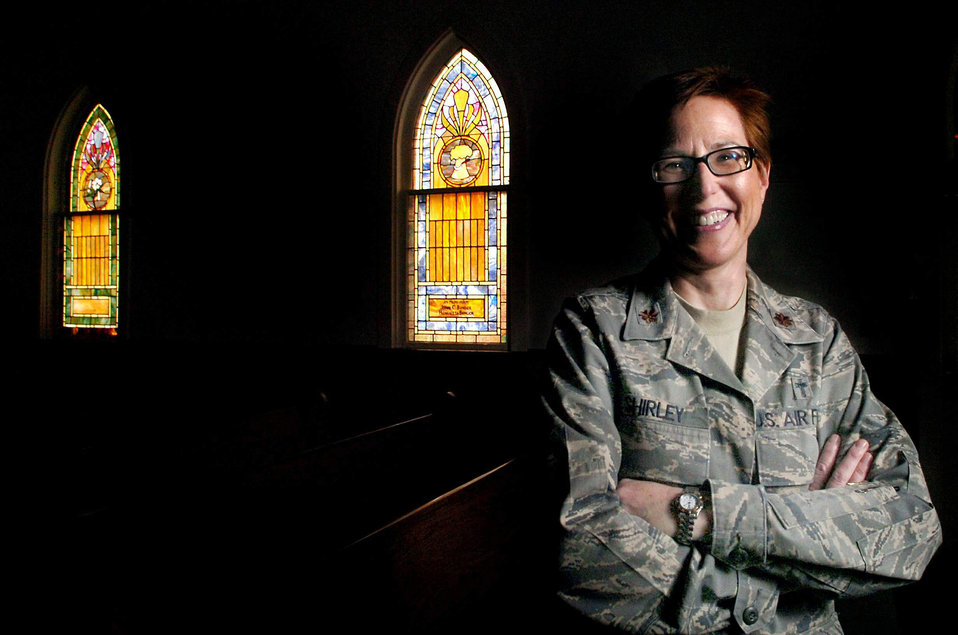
'Military Saves' campaign battles debt

Chaplain (Maj.) Sarah Shirley, a chaplain assigned to the Air National Guard Readiness Center at Andrews Air Force Base, Md., has been the driving force behind the nonprofit organization Military Saves, which is geared to helping servicemembers save money and pay down debt.